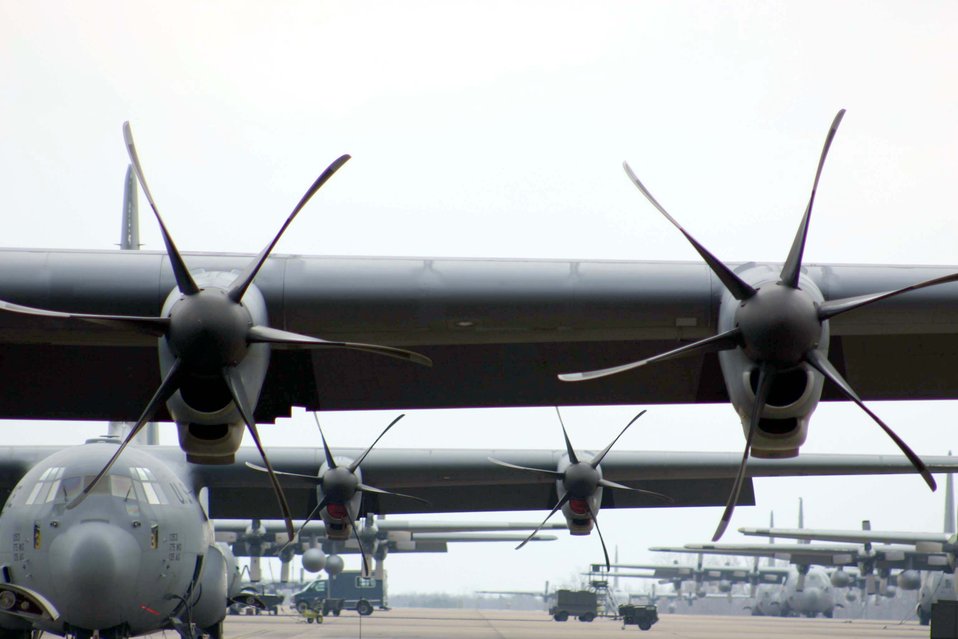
Hey 'J'

LITTLE ROCK AIR FORCE BASE, Ark. -- C-130 Hercules J-model aircraft park here. Six Guard, Reserve and active-duty flying units are participating in a monthlong procedures, development and evaluation test of the C-130J.